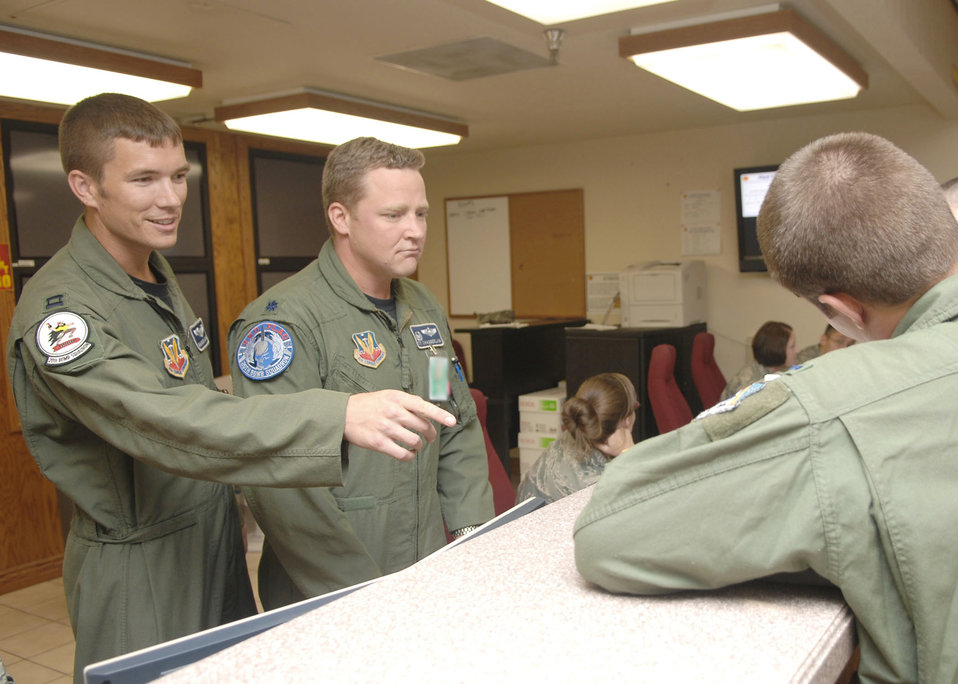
Veterans, first timers benefit from Red Flag exercises

Capt. Warren Carroll and Lt. Col. Tyrell Chamberlain man the operations desk at Red Flag 09-5 Aug. 26, 2009 at Nellis Air Force Base, Nev. Colonel Chamberlain is the acting mission director for day and Captain Carroll is shadowing the colonel for training. Red Flag is an intense two-week combat scenario exercise where flyers integrate with other airframes and units to perform at large force employment. Colonel Chamberlain is the 20th Bomb Squadron commander at Barksdale AFB, La. Captain Carroll is a pilot assigned to the 20th Bomb Squadron.